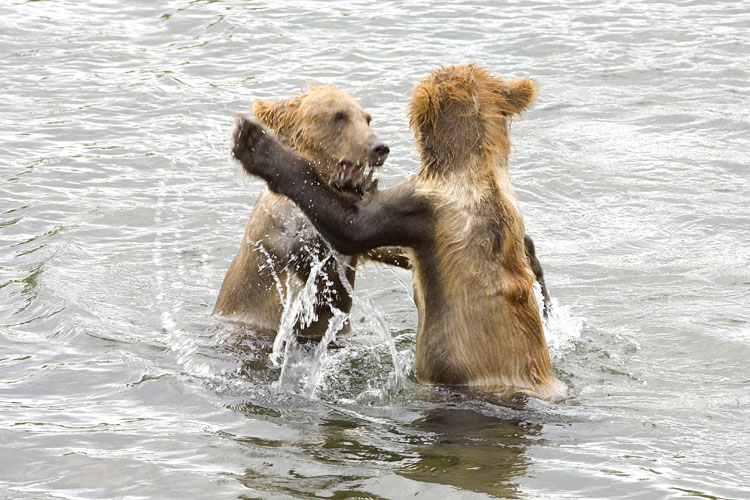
KOD Hildebrand (13)

Kodiak National Wildlife Refuge- Wildlife